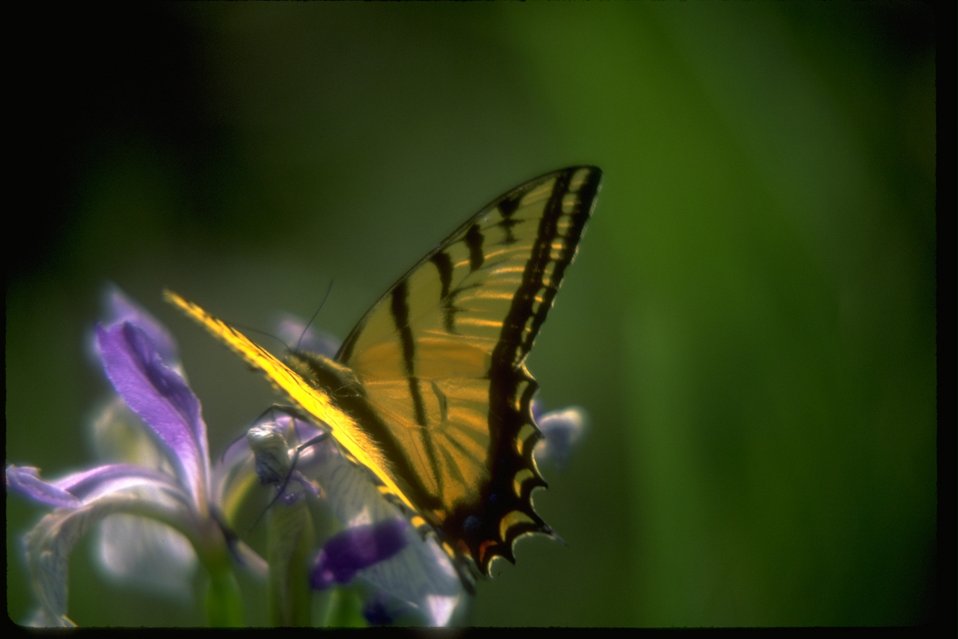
Tiger Swallowtail Butterfly in Lincoln County, Washington.